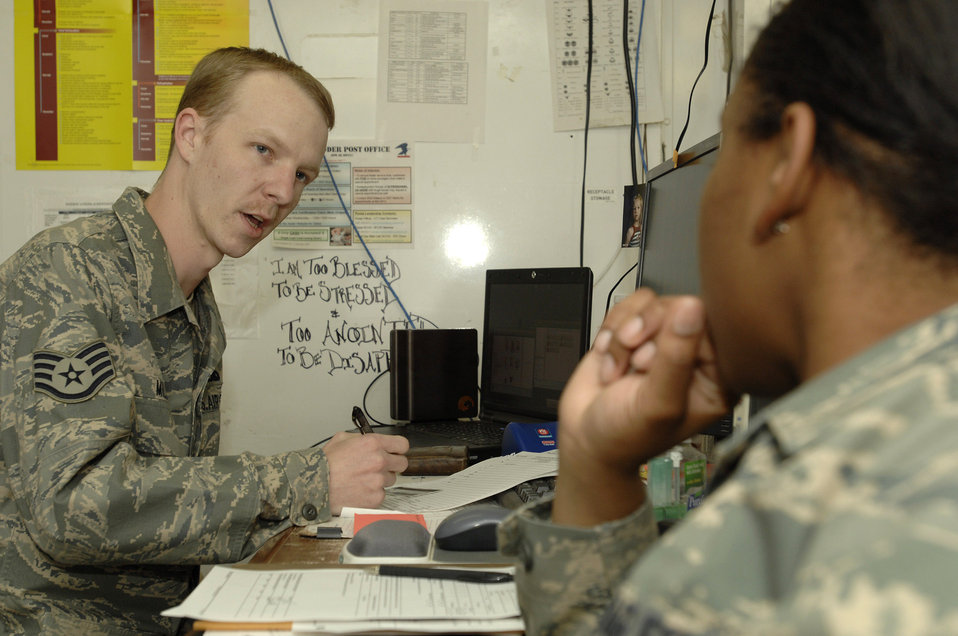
Show me where it hurts

Staff Sgt. Brian Miller asks the patient a series of questions and fills in the paperwork based on her answers Dec. 11 at the 407th Expeditionary Medical Squadron Clinic at Ali Base, Iraq. Sergeant Miller is a medical technician and assists with vaccinations, minor procedures and documentation of medical care. Sergeant Miller is deployed from Seymour Johnson Air Force Base, N.C.